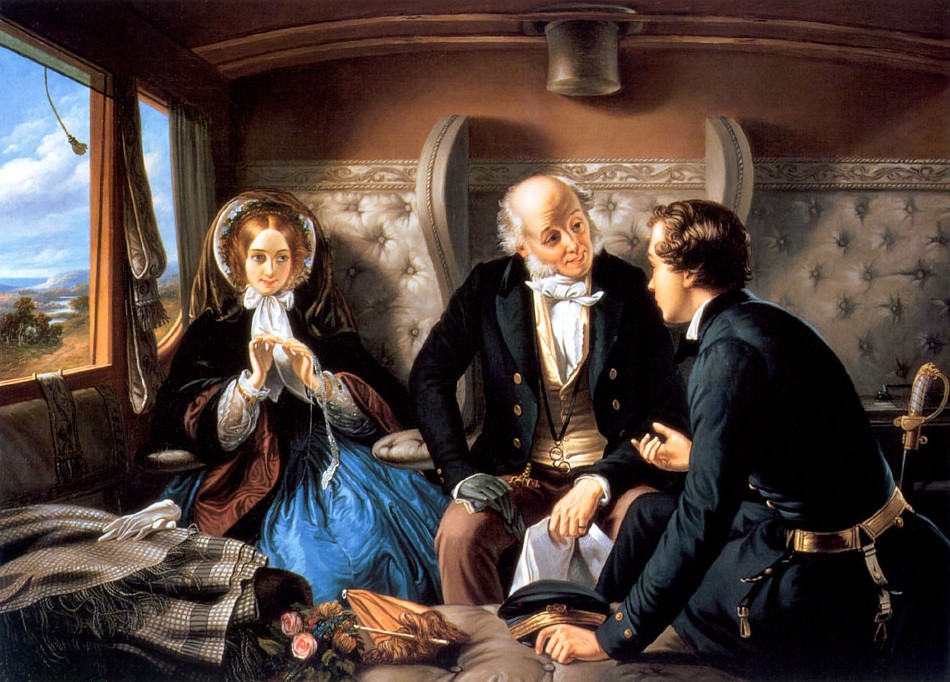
Nederlands: Tweede herziene versie van (Travelling)First Class - The Meeting De eerste versie werd als controversieel beschouwd omdat de jongeman met de jongedame praatte terwijl de oudere man was ingedommeld. Schilder (Abraham Solomon)overleed in 1862 Revised version of (Travelling) First Class - The Meeting The original version was (in the Victorian era) considered as too controversial